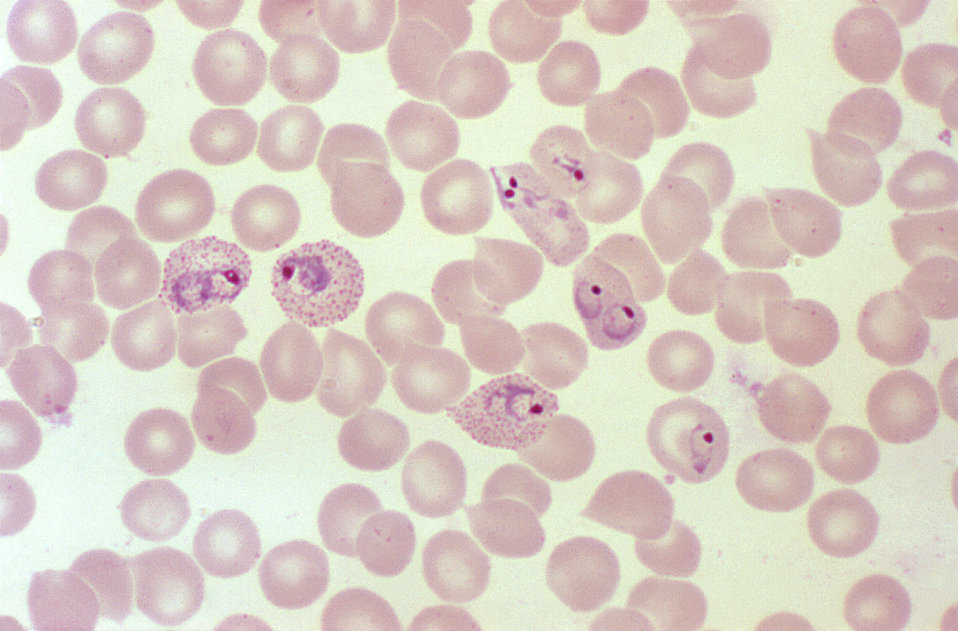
A photomicrograph of a blood smear showing erythrocytes containing developing P. vivax parasites, magnified 1000X.